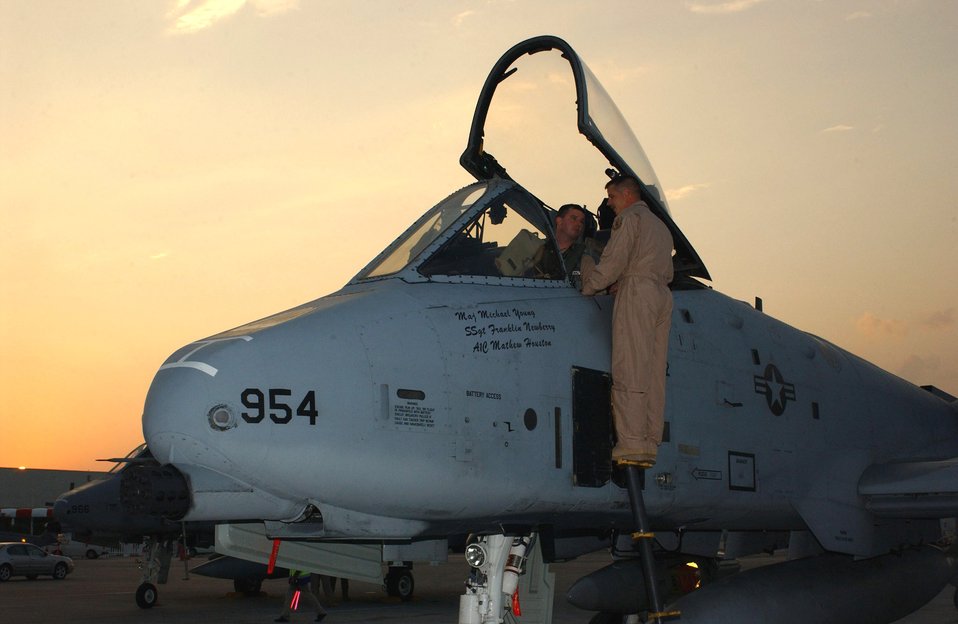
Performing in Dubai

DUBAI, United Arab Emirates (AFPN) -- Maj. Paul Perkins is greeted by Staff Sgt. Matthew Copeland upon arrival for the Dubai Air Show. Major Perkins is an A-10 Thunderbolt pilot from Spangdahlem Air Base, Germany, and Sergeant Copeland is an A-10 crew chief from Pope Air Force Base, N.C.